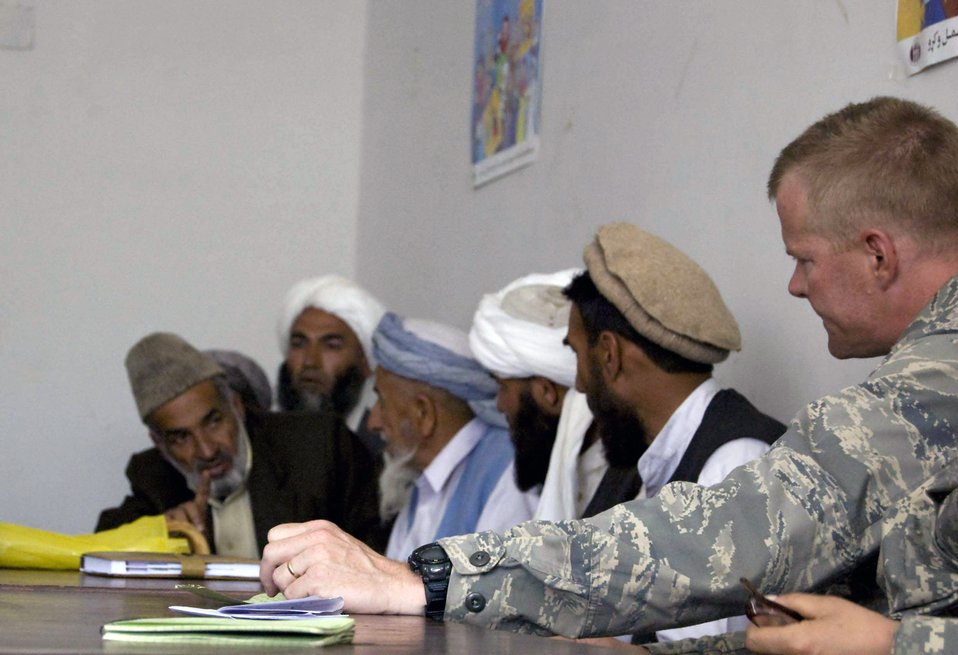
Reconstruction team helps Aghans

Lt. Col. David Poage listens intently to a village elder during a meeting with tribal leaders and elders May 4 at the Alishang District Center in the Laghman Province in Afghanistan. During the meeting, leaders discussed pressing issues and problems affecting the community. Colonel Poage is the commander of the Laghman Provincial Reconstruction Team.